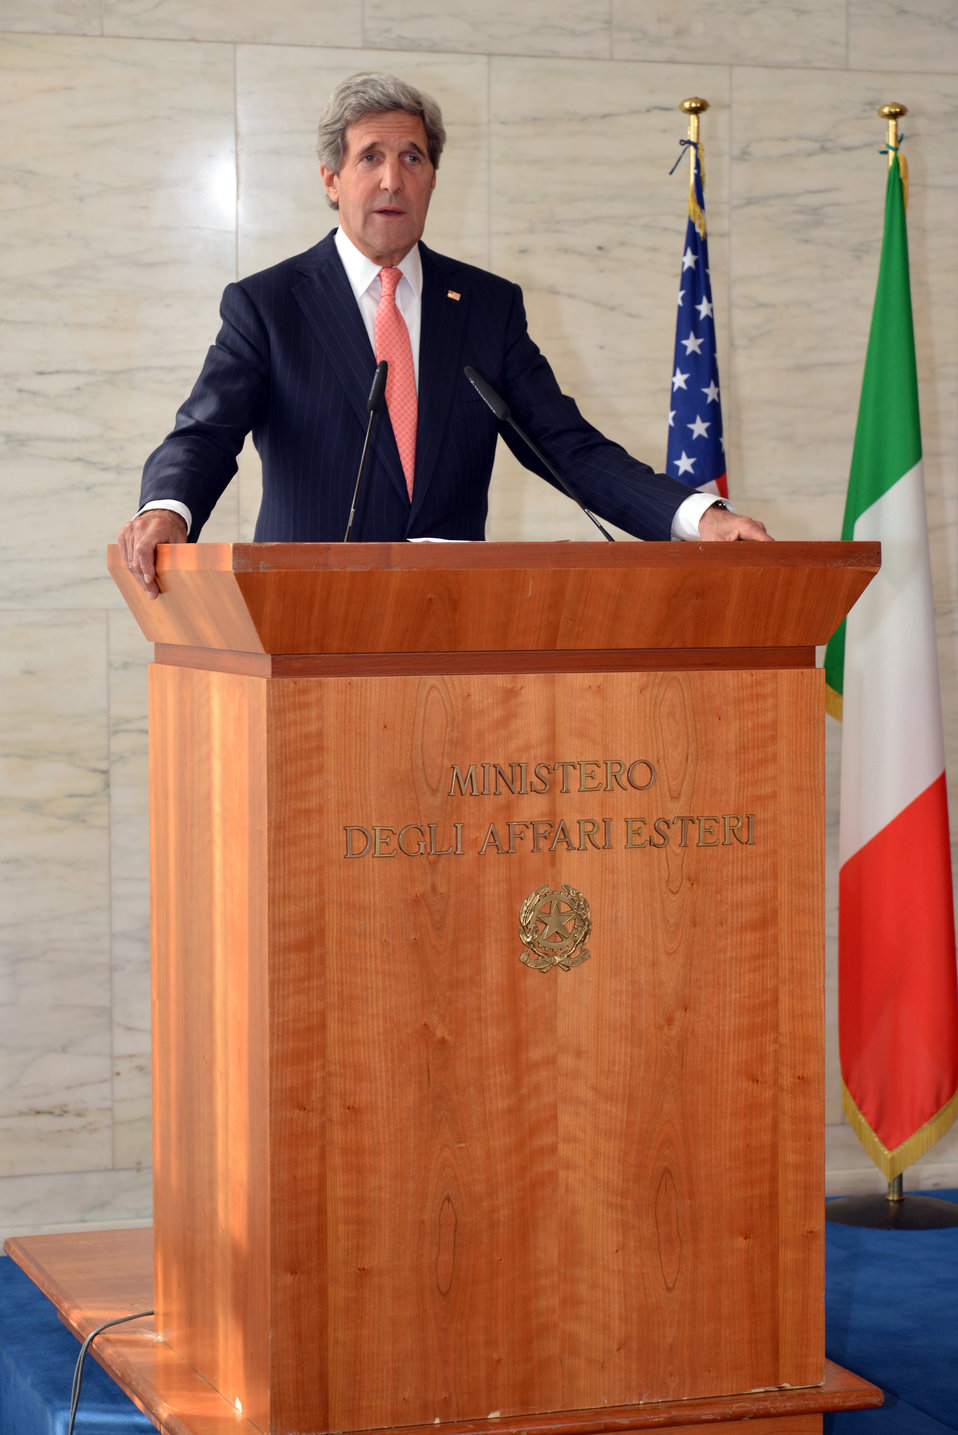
Secretary Kerry Addresses Reporters in Rome

U.S. Secretary of State John Kerry addresses reporters during a joint press conference with Italian Foreign Minister Emma Bonino at the Ministry of Foreign Affairs in Rome, Italy, on May 9, 2013.